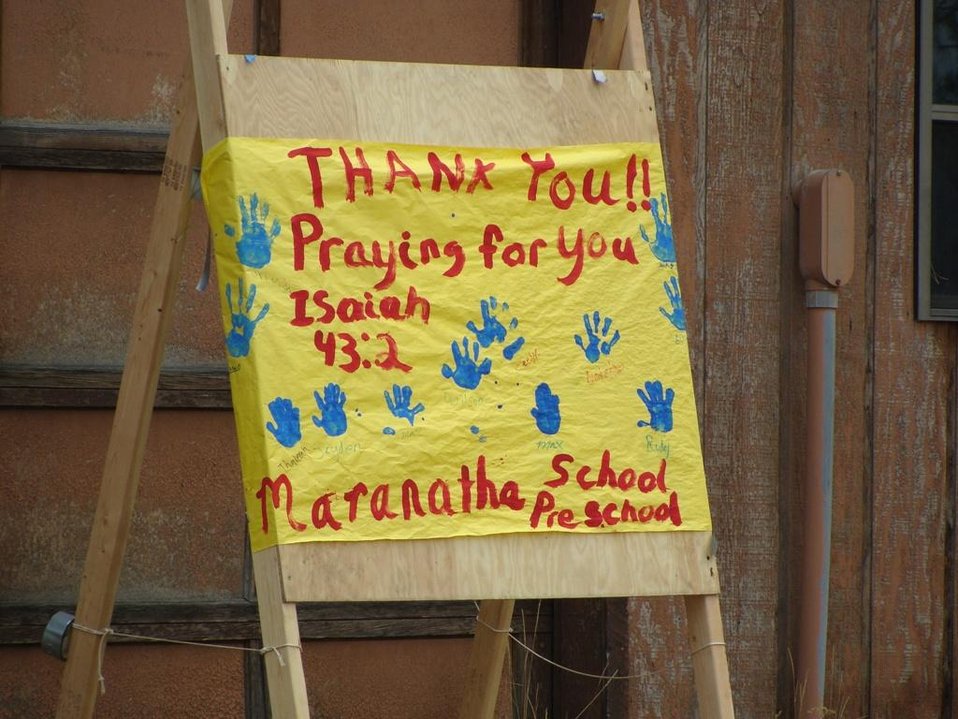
A thank you note to firefighters is posted at the Little Queens Fire Incident Command Post (ICP) from Maranathe pre-school students. The Little Queens Fire in Boise National Forest near Atlanta, ID began on Aug. 17, 2013 is under investigation. The fire has consumed approximately 20,956 acres and is 10% contained.